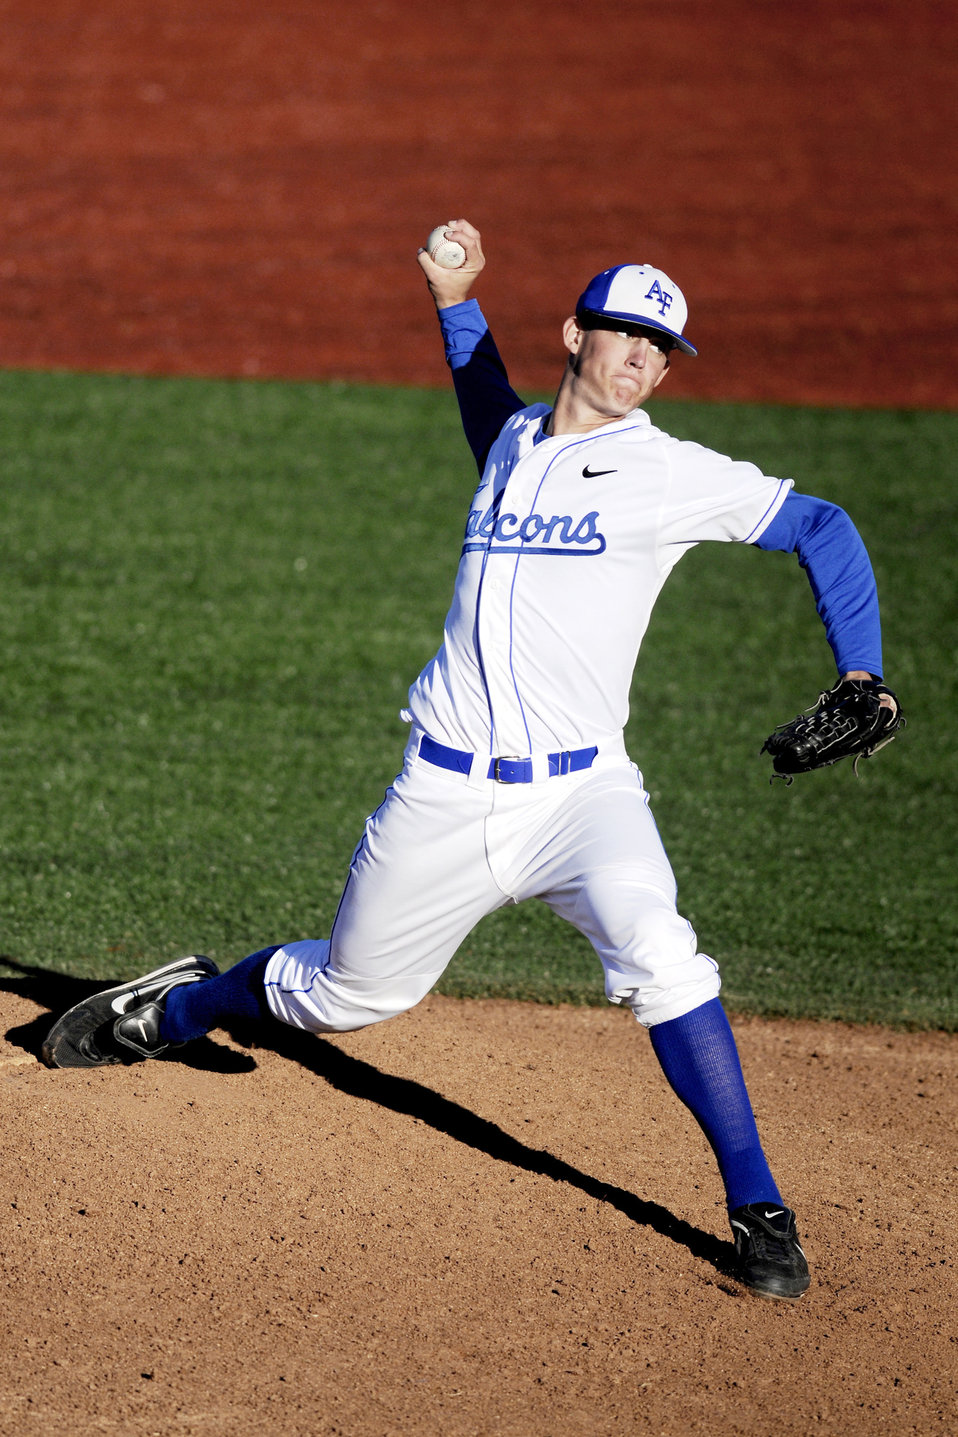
Falcons defeat Colorado School of Mines

Falcon sophomore Evan Abrecht winds up for a pitch during play against Colorado School of Mines March 16, 2010 at the U.S. Air Force Academy's Falcon Field in Colorado, March 16, 2010. Albrecht pitched one inning in the 12-10 victory.